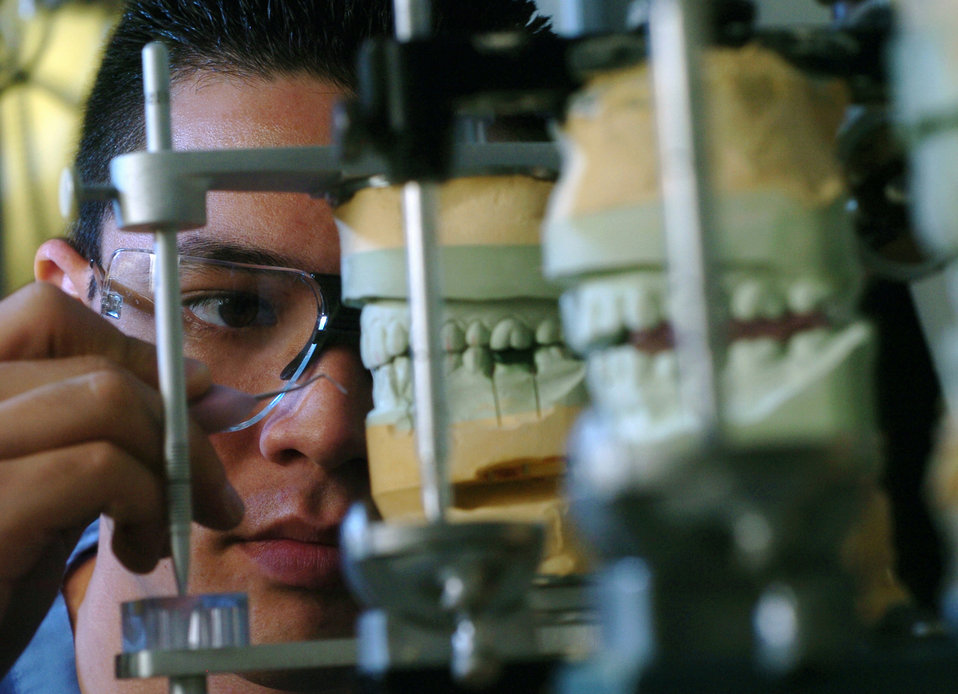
That's a mouth full

YOKOTA AIR BASE, Japan -- Airman First Class Eric Parks inspects inspects the line angle of a casts of teeth at the clinic here March 31. He is a dental laboratory technician with the 374th Dental Squadron.